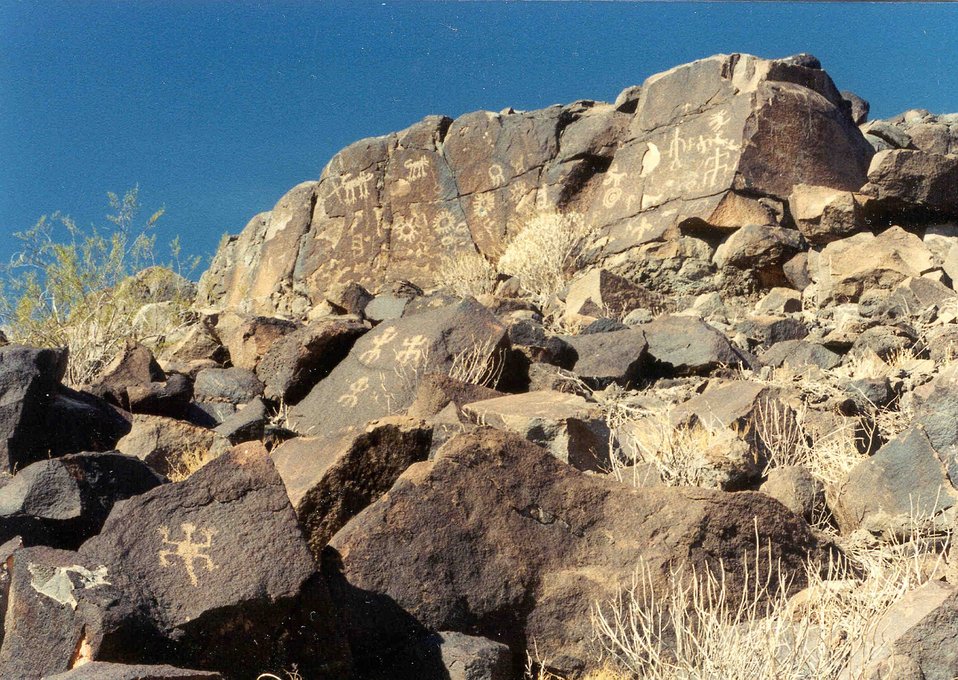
Petroglyphs at Sears Point Archaeological Site